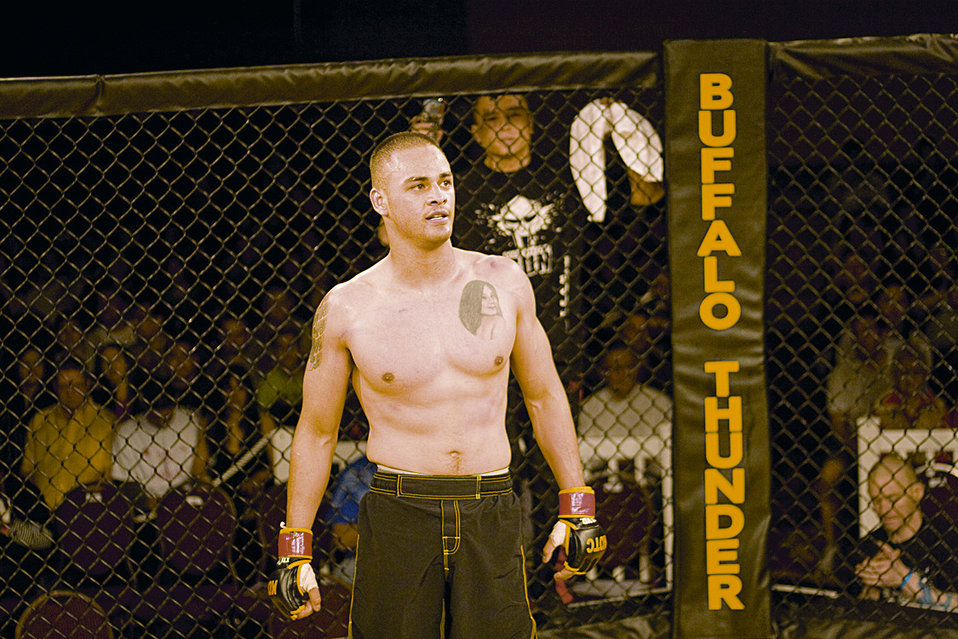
A mixed martial artist training

NCO trains for MMA fight on base. Tech Sgt. David Perez is a mixed martial artist.